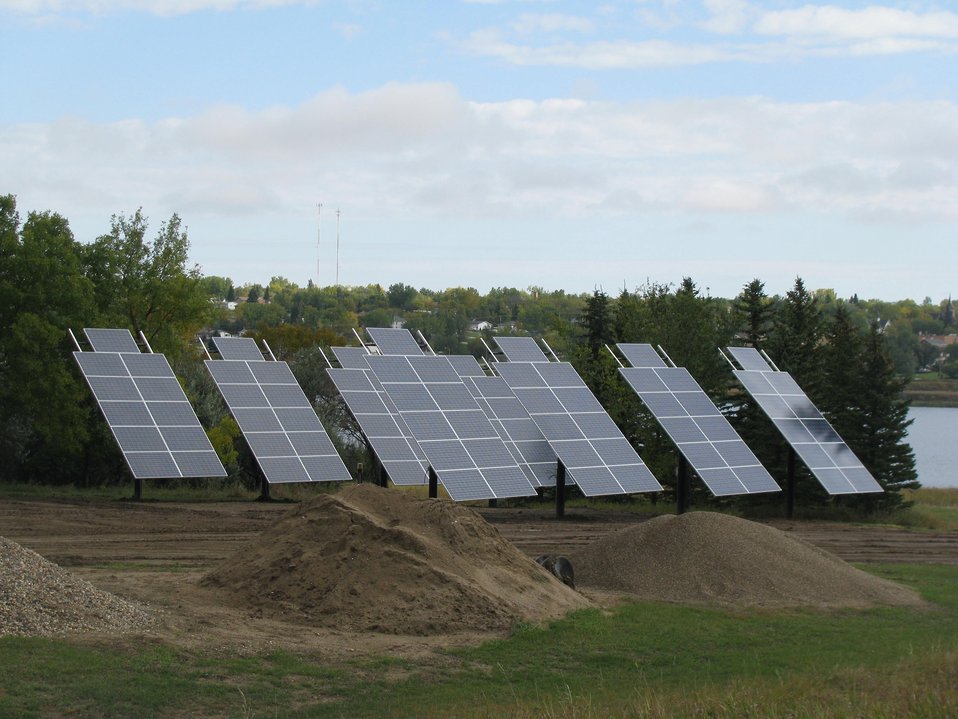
Photovoltaic panels at Des Lacs National Wildlife Refuge

20.1 KiloWatt photovoltaic system serving the Headquarters building at Des Lacs NWR in North Dakota.